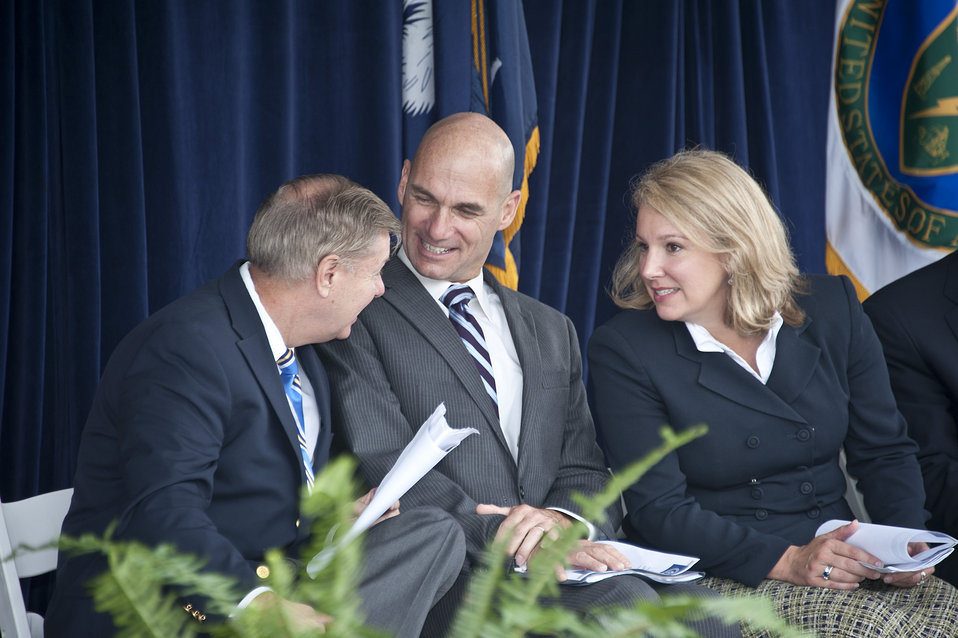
Thomas P. D’Agostino, Undersecretary for Nuclear Security and Administrator, NNSA speaking at the formal tank closure celebration in H Area

Thomas P. D’Agostino, Undersecretary for Nuclear Security & Administrator, NNSA,
South Carolina Department of Health & Environmental Control, Director Catherine Templeton
Senator Lindsey Graham